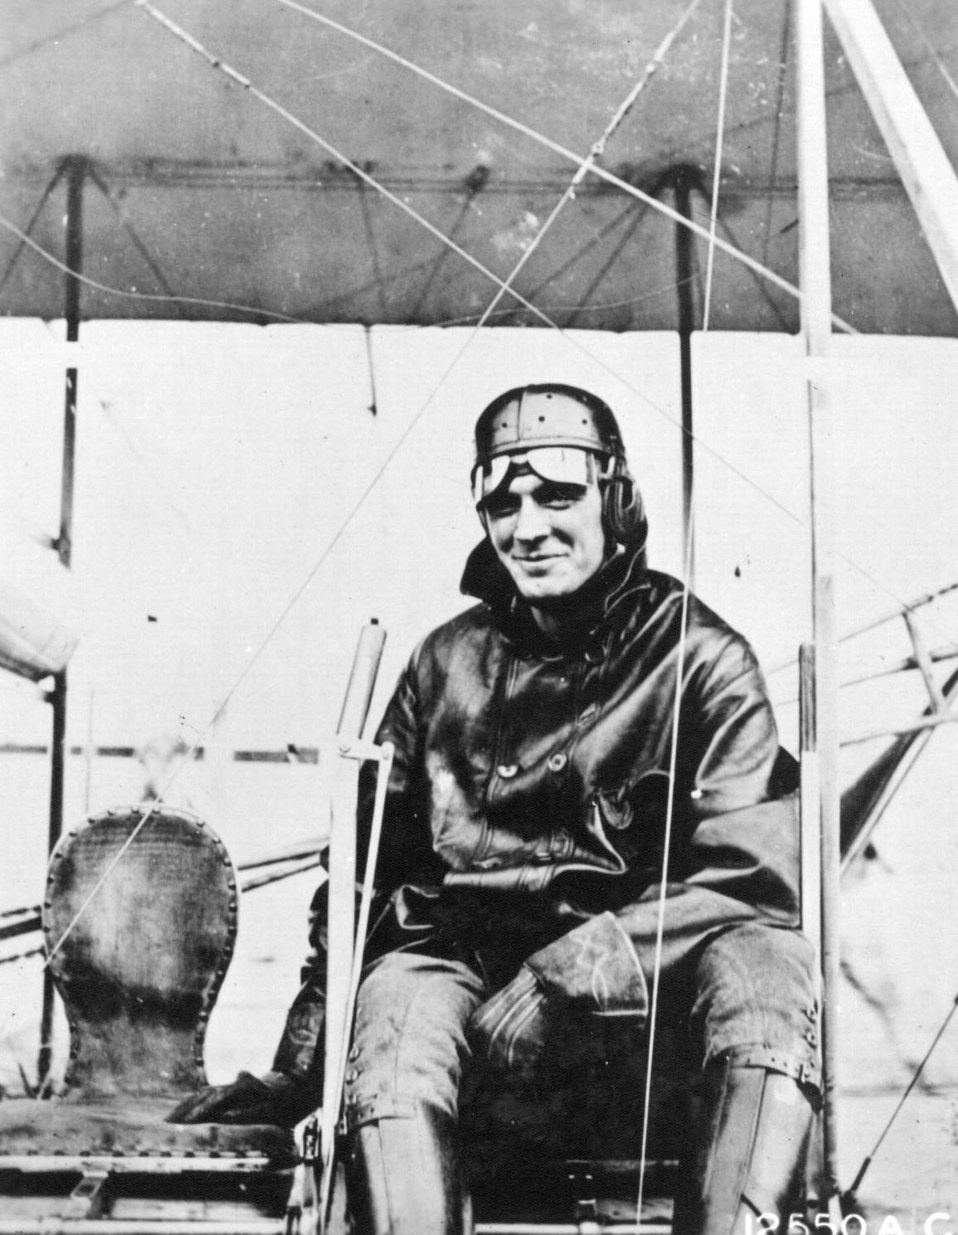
Wright B Airplane

Early Years -- Lieutenant Henry H. Arnold in Wright B Airplane, College Park, Maryland, 1911.